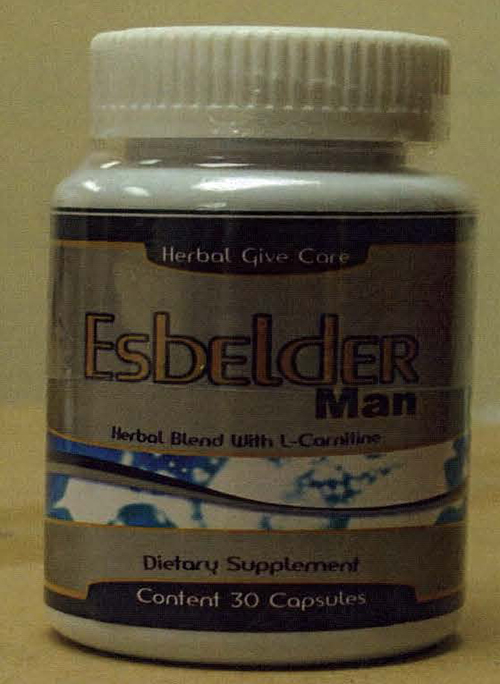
RECALLED – Dietary Supplement

August 16, 2013 – Product Recall – Herbal Give Care LLC Issues Voluntary Nationwide Recall of Esbelder Man Capsules, Esbelder Fem Capsules, and Esbelder Siloutte Capsules Vitamin Supplements Due to Potential Health Risks.